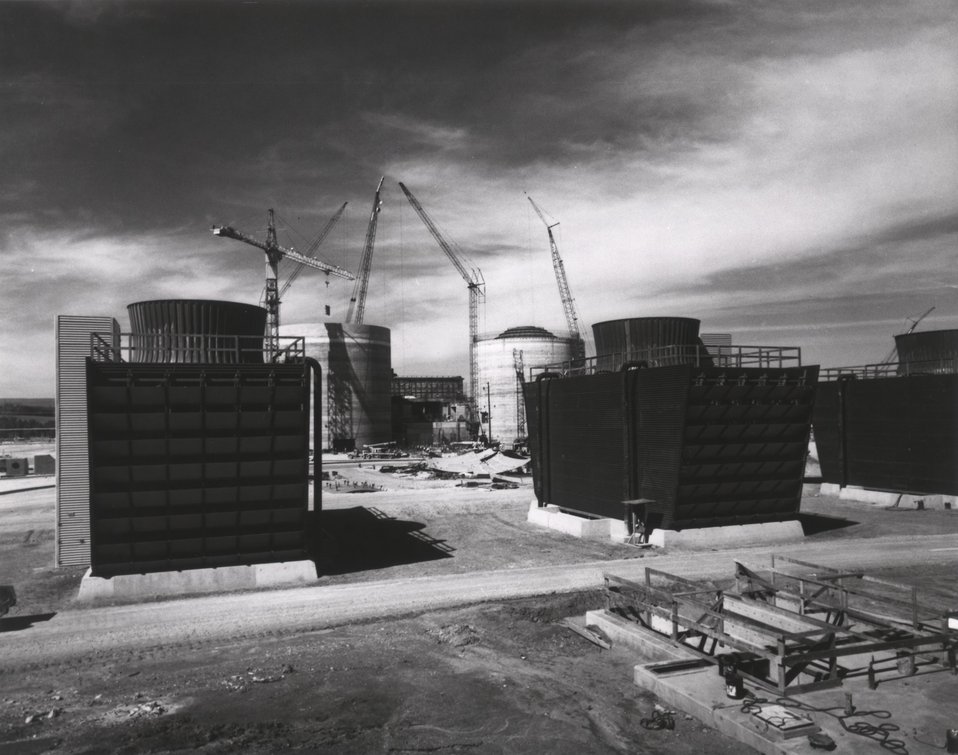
Construction activities at Units 1 and 2 of Tennessee Valley Authority's Sequoia Nuclear Power Plant on the Tennessee River northeast of Chattanooga, Tenn. Circa 1974.